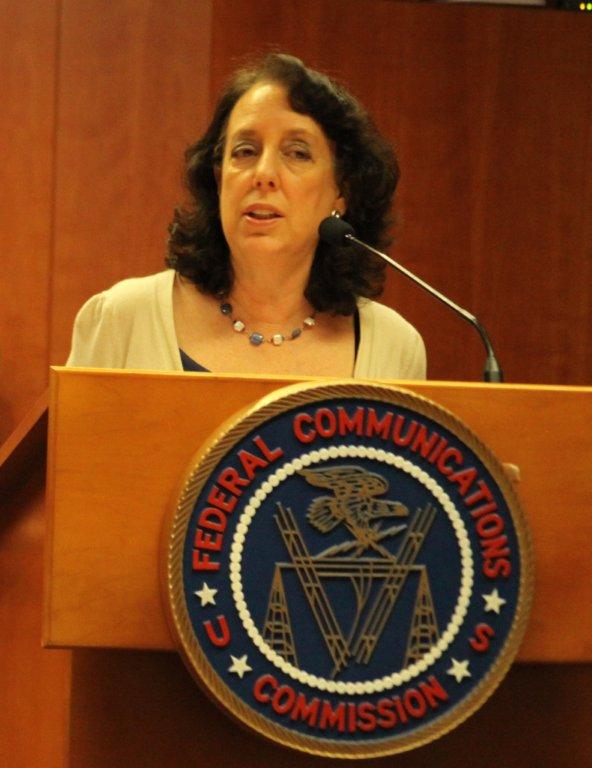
Karen Peltz Strauss, CGB Deputy Bureau Chief, Giving Remarks at the Chairman's Advancement in Accessibility Awards